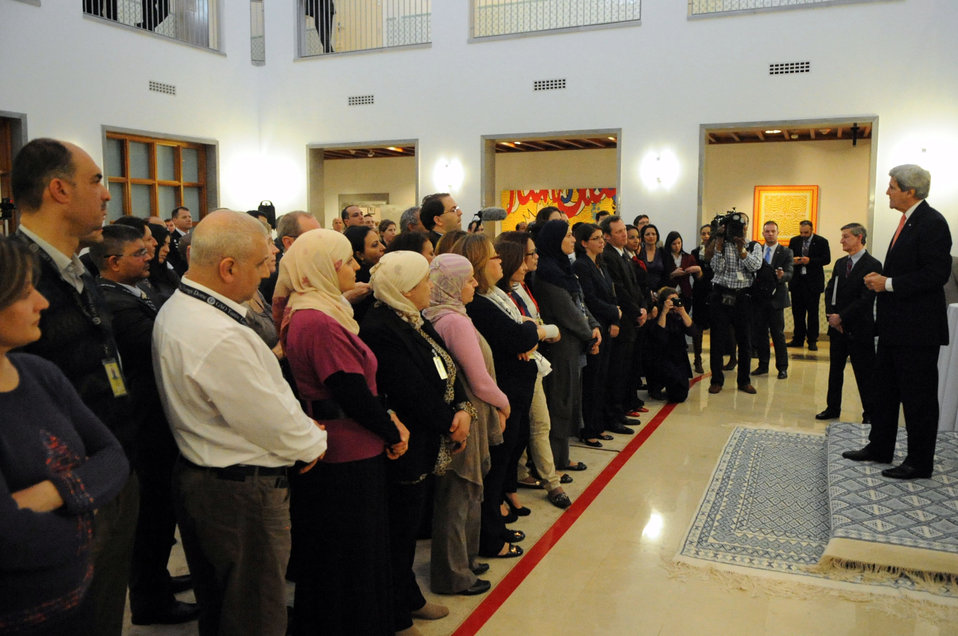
Secretary Kerry Addresses U.S., Locally-Hired Staff at Embassy Tunis

U.S. Secretary of State John Kerry thanks both U.S. citizens and locally-hired staffers who work at the U.S. Embassy in Tunis, Tunisia, at the conclusion of a visit on February 18, 2014.